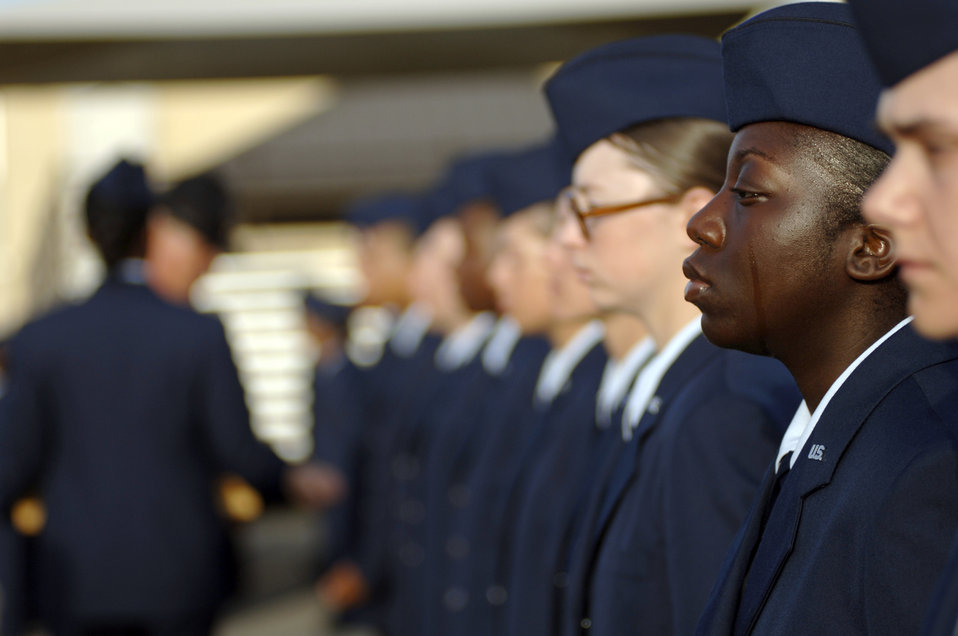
Top chief elaborates on Airman pride

Trainee Ashley Williams sheds a tear during the Airman's coin ceremony at Lackland Air Force Base, Texas, on Aug. 7. Trainees in their sixth week of basic military training receive an Airman's coin marking their transition from trainee to Airman.